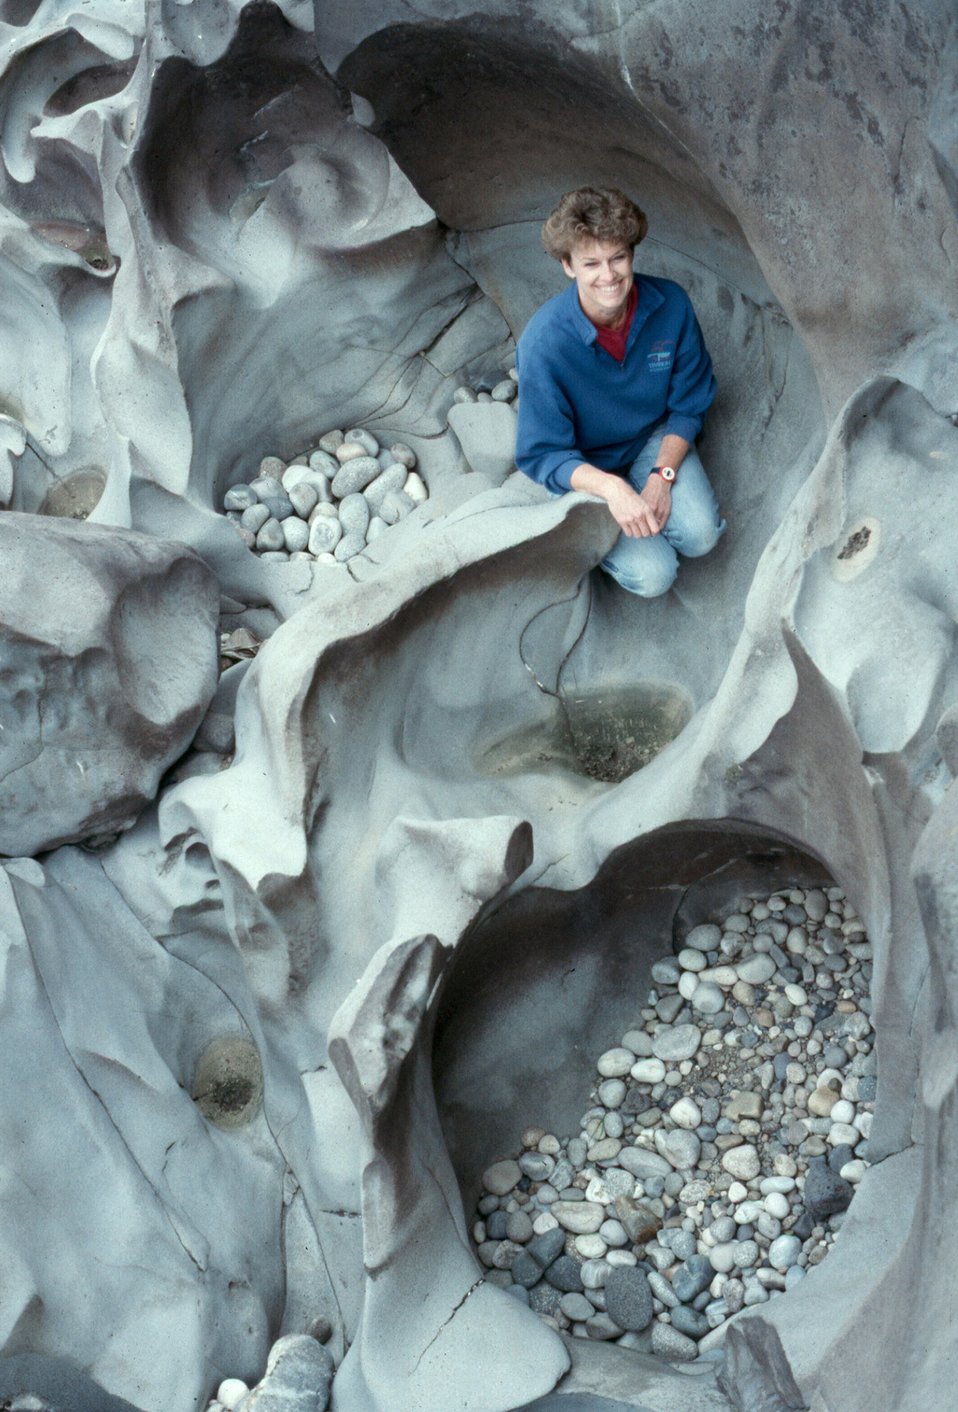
Series of potholes Shoshone Field Office USRD Upper Snake River District